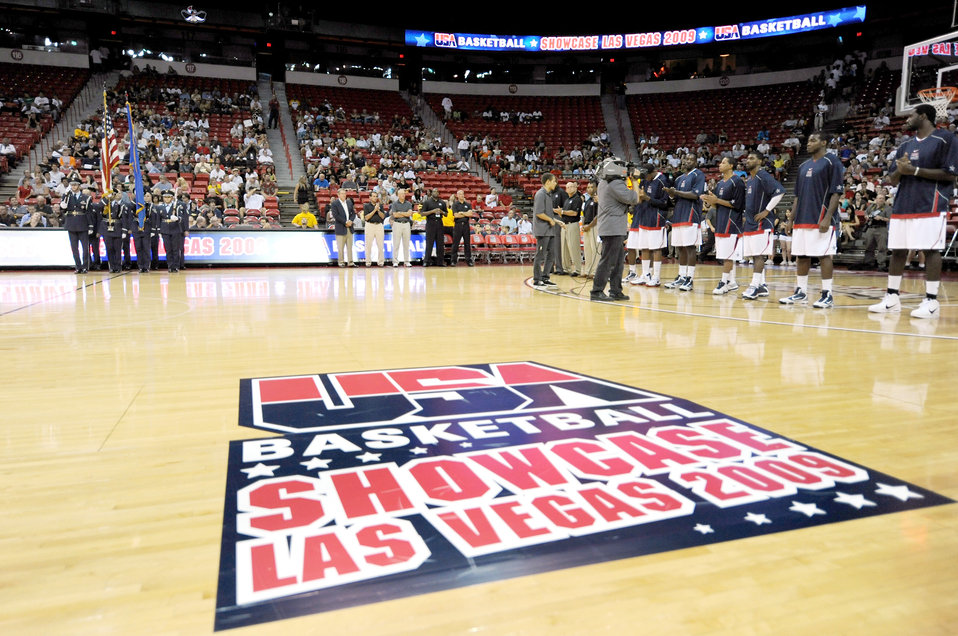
Nellis Airmen honored at USA Basketball exhibition

Members of the Nellis Air Force Base, Nev., Honor Guard prepare to present the colors for a USA Basketball exhibition game at the Thomas and Mack Center July 25 in Las Vegas. Six Nellis Airmen were honored and invited to attend the game.